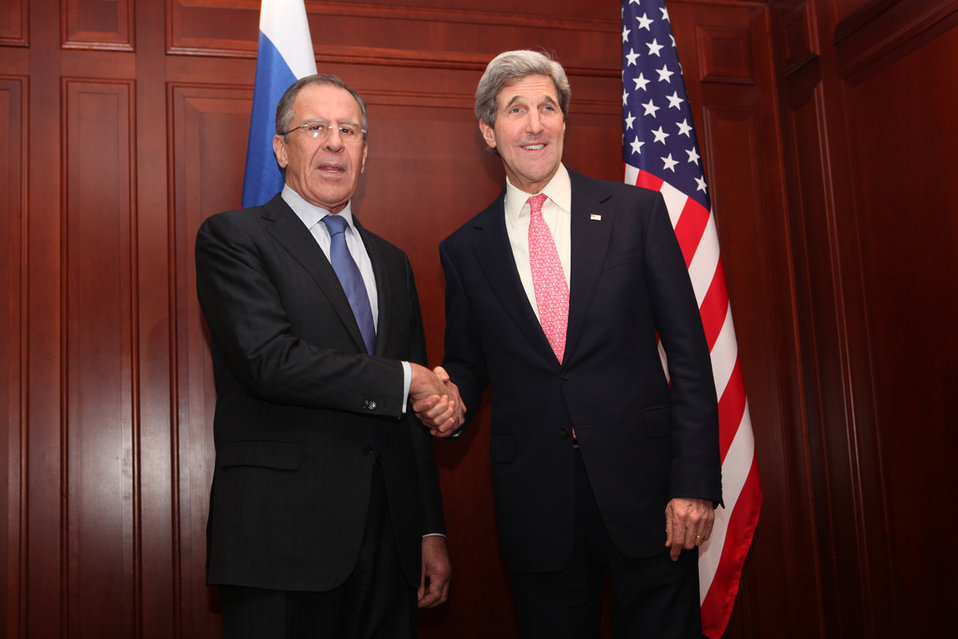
Secretary Kerry Shakes Hands With Russian Foreign Minister Lavrov

U.S. Secretary of State John Kerry shakes hands with Russian Foreign Minister Sergey Lavrov prior to their bilateral meeting in Berlin, Germany, February 26, 2013.